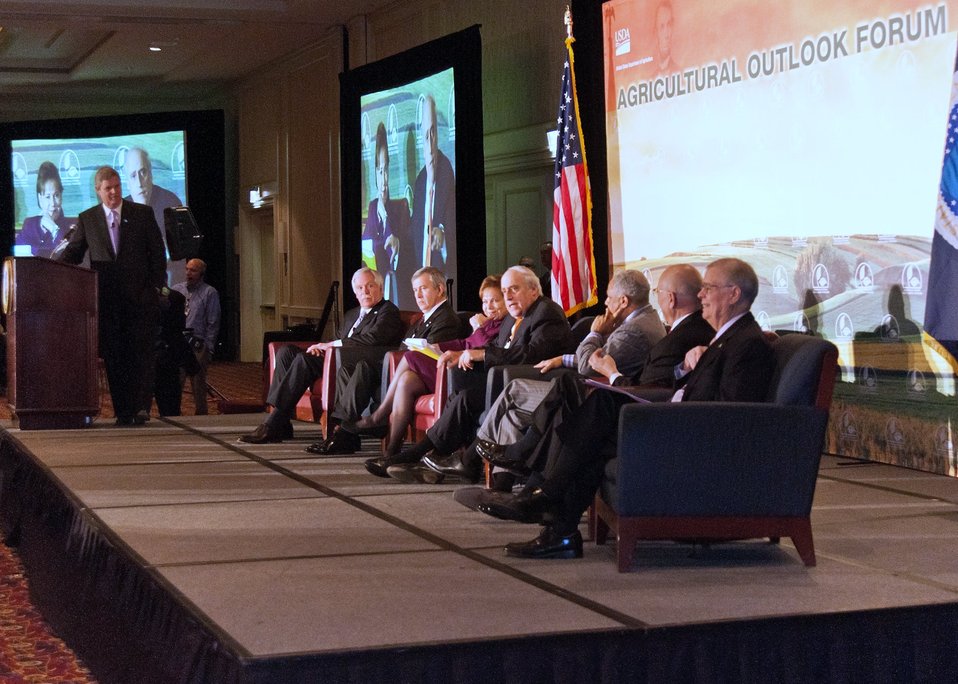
Agriculture Secretary Tom Vilsack (left) moderates a panel of former Secretaries of Agriculture (from left to right) Ed Schafer, 2008-2009, Senator Mike Johanns, 2005-2008, Ann M. Veneman, 2001-2005, Daniel Glickman, 1995-2001, Mike Espy 1993-1994, Clayton Yeutter 1989-1991 and John Block 1981 -1986 at the 2012 Agricultural Outlook Forum, “Moving Agriculture Forward” in Arlington, VA. On Thursday, February 23, 2012.